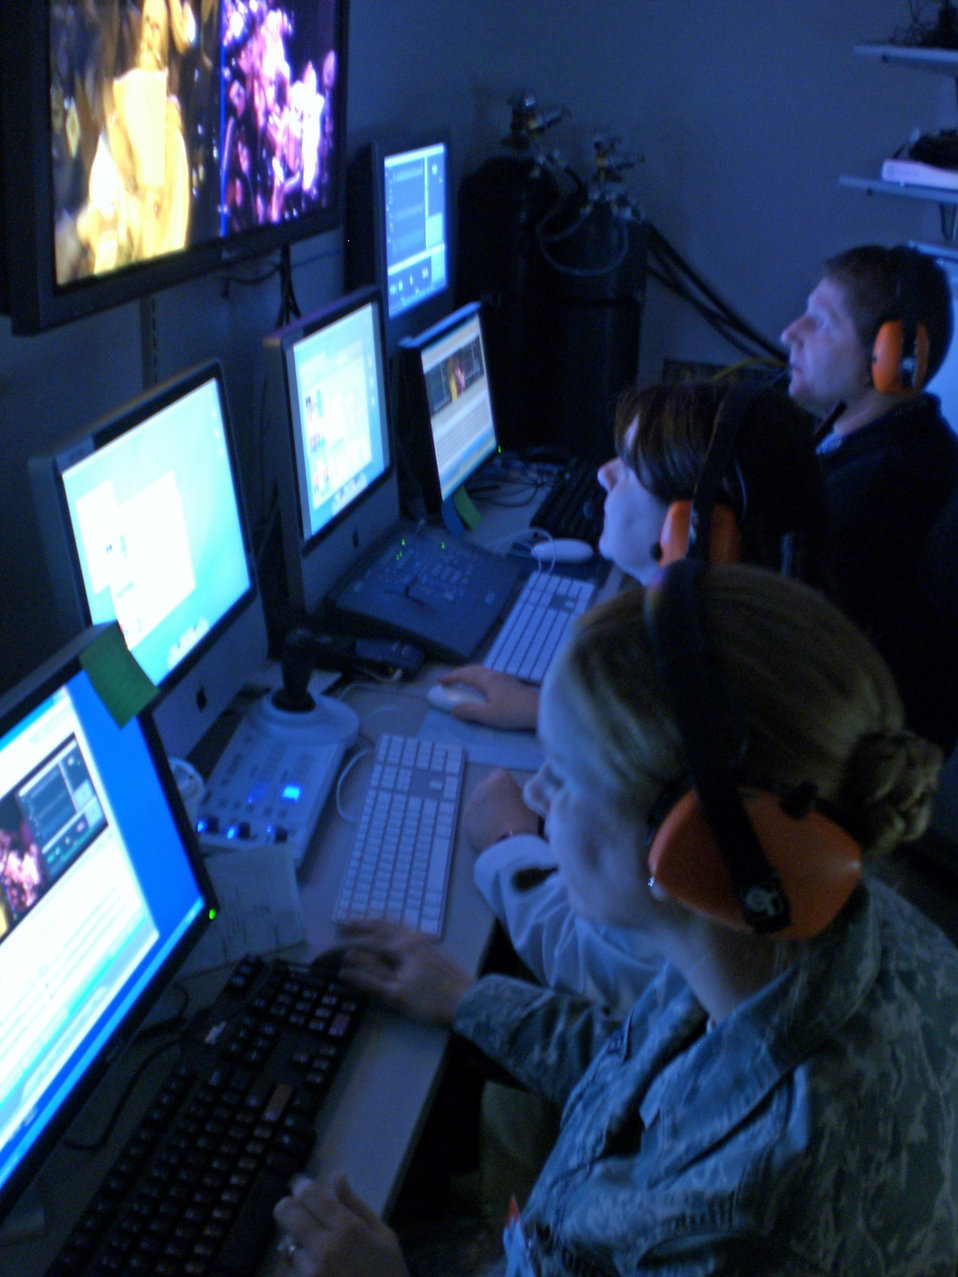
CSTARS trains Air Force trauma teams

Master Sgt. Angelique Boshonek, Sharon Walsh-Hart and Dan Donegan operate the human patient simulator from a control room Feb. 12, 2010, at University Hospital Cincinnati in Cincinnati, Ohio. The facility provides highly realistic training for critical care air transport teams and simulates an Air Force airlifter in flight. Sergeant Boshonek is a cardiopulmonary technician, Ms. Hart is a emergency room nurse and contract CSTARS simulation coordinator, and Mr. Donegan, director of simulation education. All are part of the Air Force's CSTARS training cadre at University Hospital.